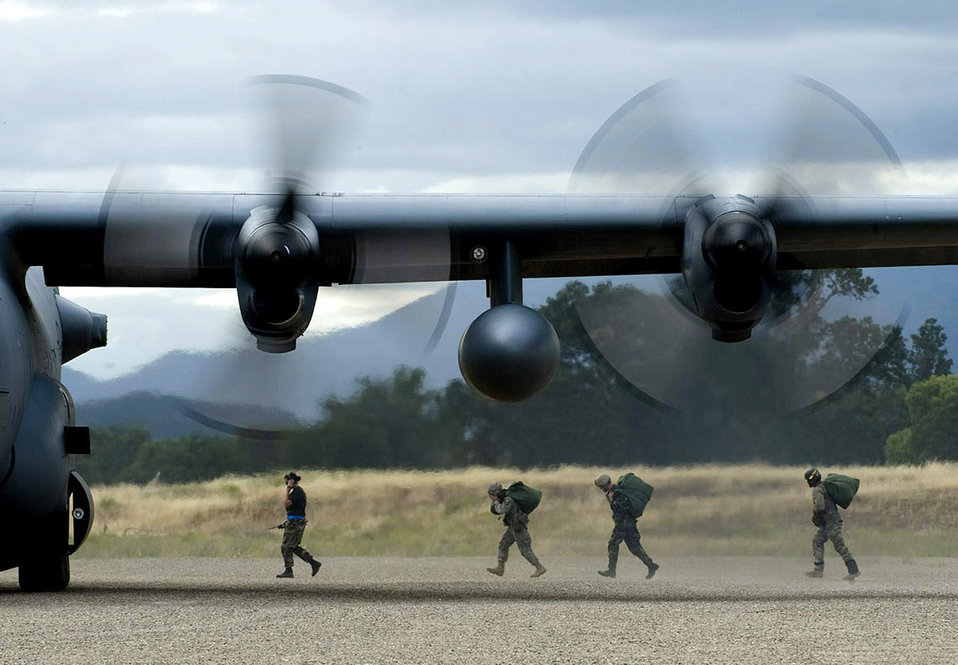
Going for a ride

Airmen and Soldiers board a C-130 Hercules aircraft during Exercise Hydra 2009. Hydra is a training exercise developed by officials with the 615th Contingency Response Wing at Travis Air Force Base, Calif., to test mission capabilities such as command and control, aerial port, maintenance and air mobility liaison duties in a joint environment.